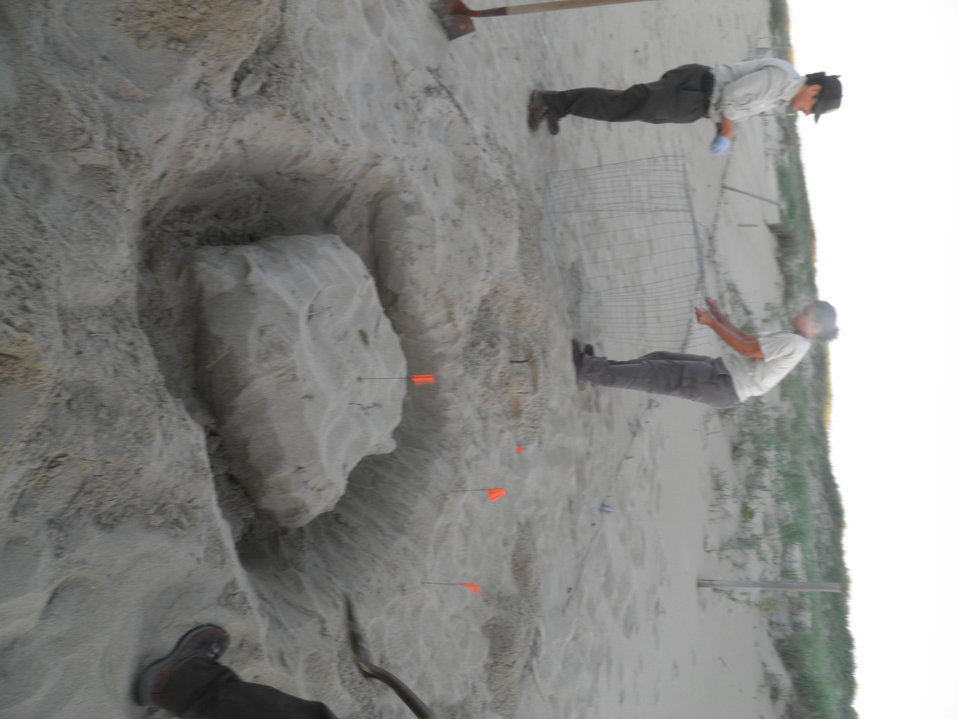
SCA Intern assists a Back Bay biologist placing the protective cage over the eggs.

Credit: USFWS
Crawl 3, Nest 3